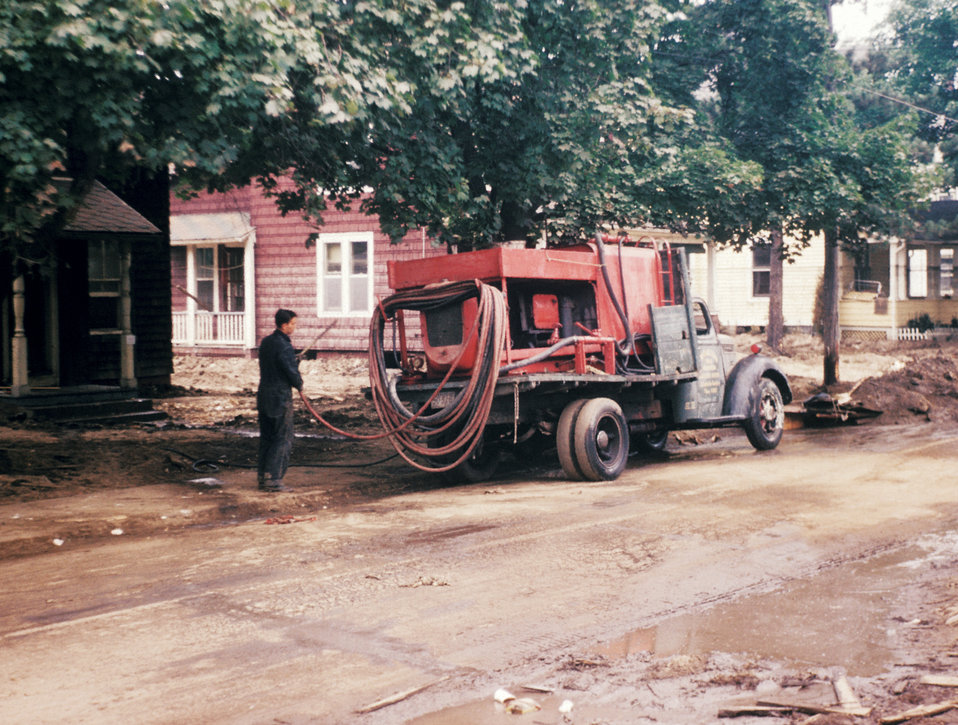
Field workers conduct a campaign of community tree spraying after a 1955 flood in Connecticut.